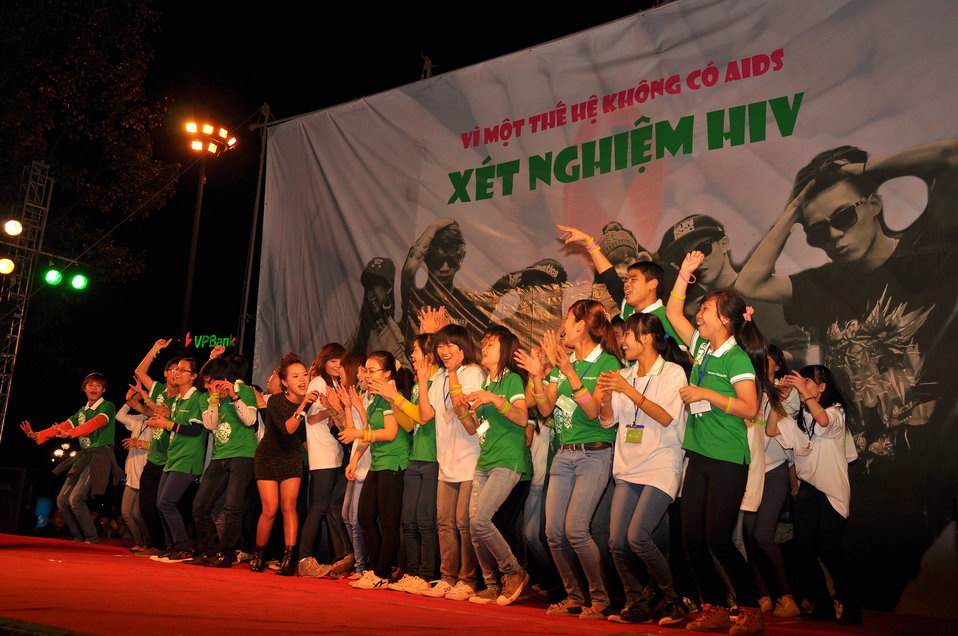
USAID and PEPFAR supports an outdoor concert to promote Vietnam's national action month for HIV

Hanoi, December 18, 2012.